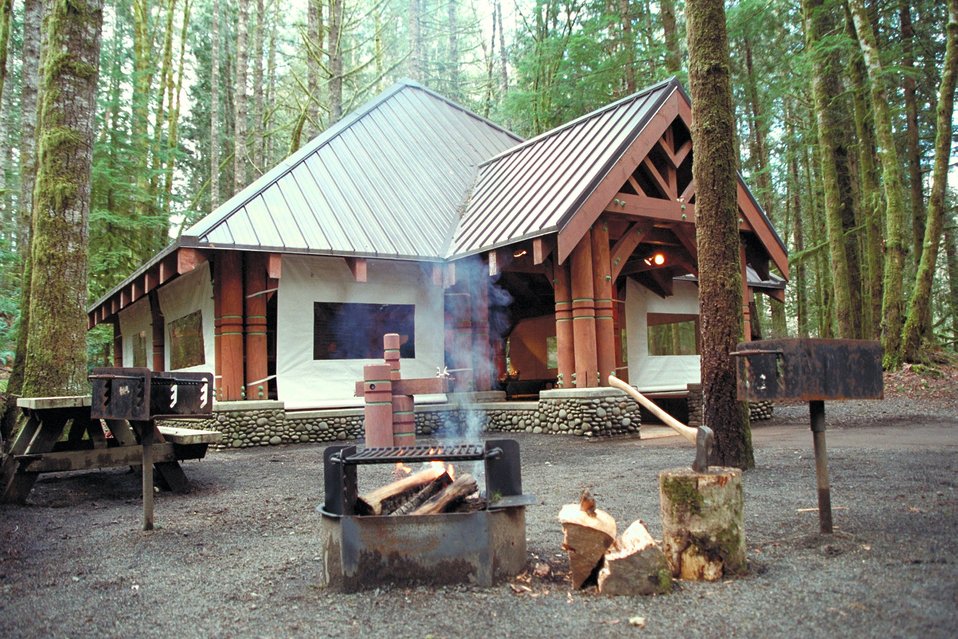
Cascade Stream Watch is an environmental education program conducted at BLM's Wildwood Recreation site.